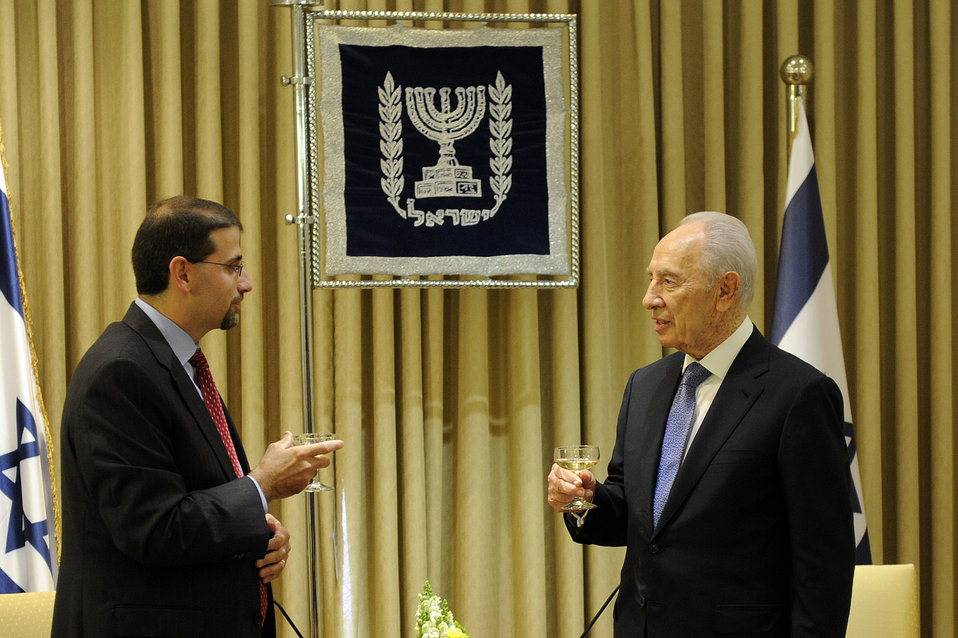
Ambassador Shapiro Meets With Israeli President Peres

U.S. Ambassador to Israel Daniel B. Shapiro meets with Israeli President Shimon Peres after presenting his credentials at the President's residence in Jerusalem on August 3, 2011.